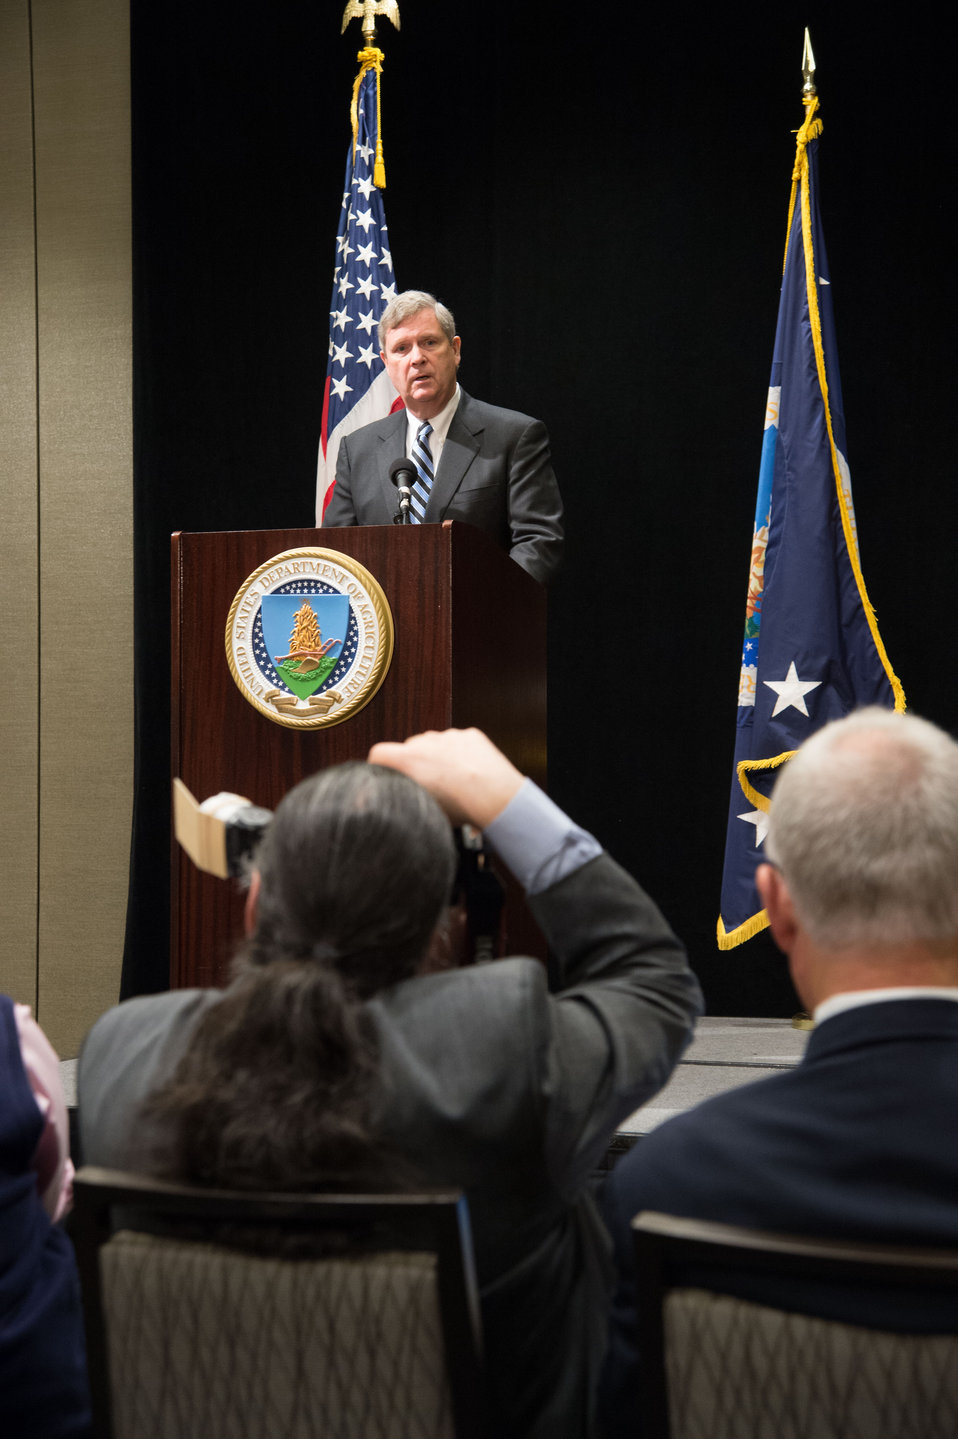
Agriculture Secretary Tom Vilsack makes remarks to the press at the 2014 Agricultural Outlook Forum on Thursday, Feb. 20, 2014 in Arlington, VA. The U.S. Department of Agriculture's (USDA) annual Agricultural Outlook Forum brings together the agricultural community to discuss policy, trade, science, rural development, and the economic outlook for the coming year. The Forum also focuses on forestry, health and nutrition issues, and the changing dynamics and face of rural America.